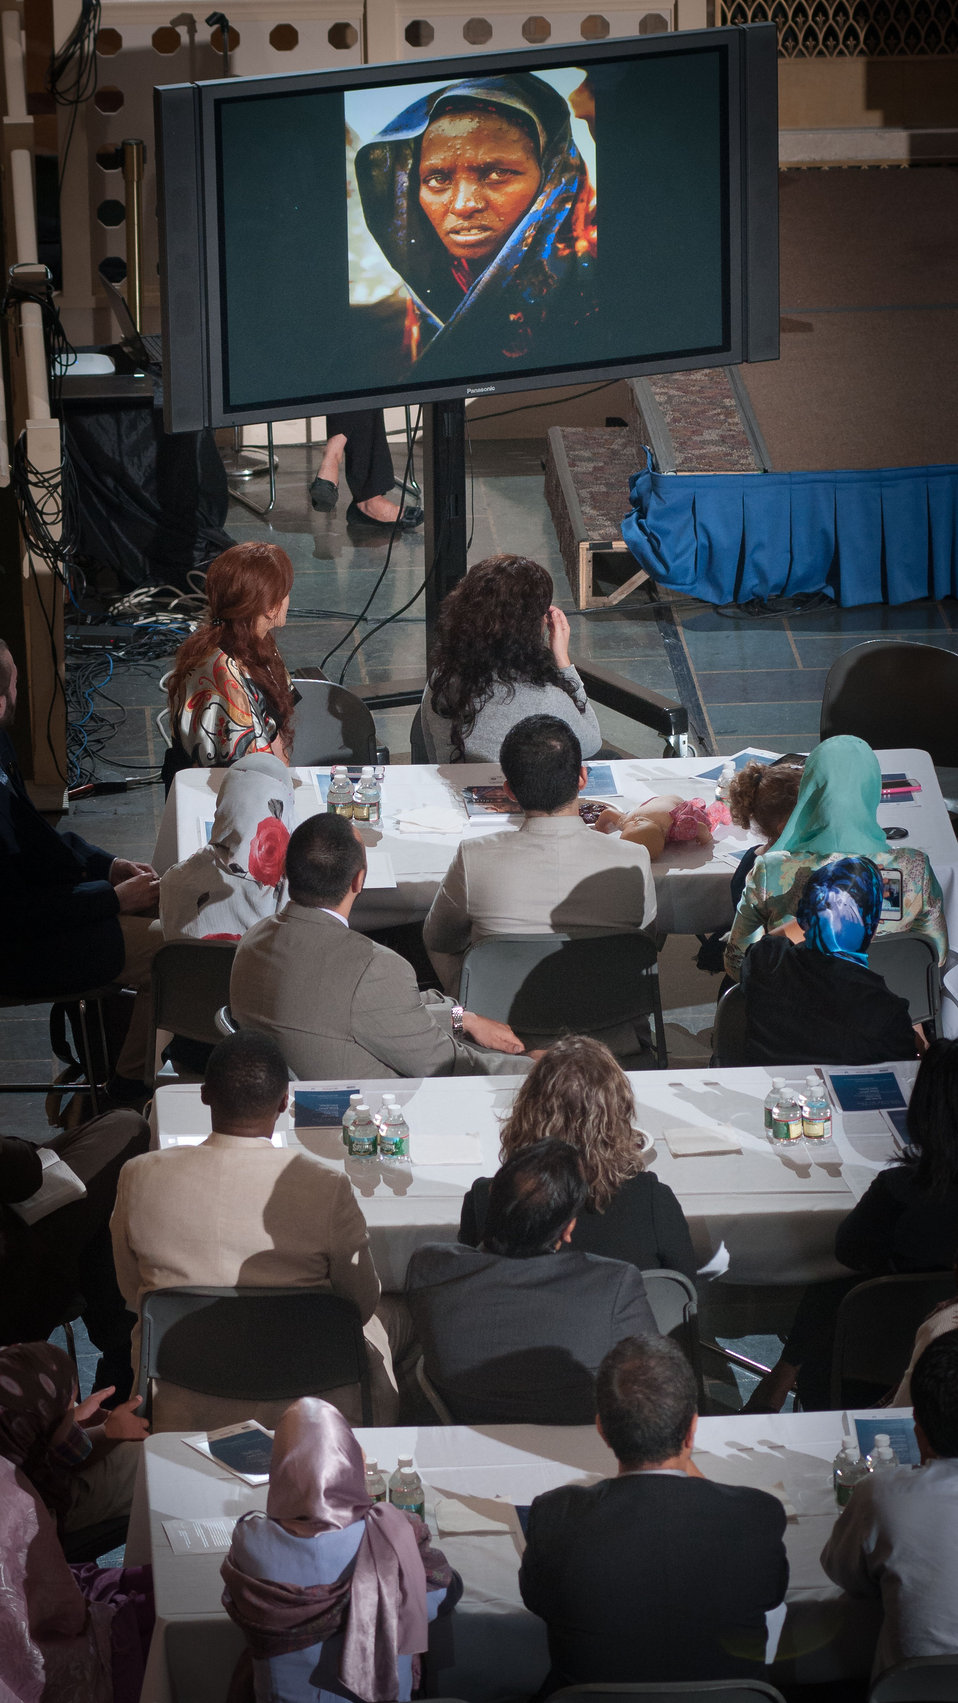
Guests view the photographic presentation 'Scars and Smiles' prior to Islamic Relief USA Creative Director and Photographer Ridwan Adhami talking about the concept and preconceived notions he had before the start of this documentary project and the new perspectives into the human condition he gained; during the Iftar event, co-sponsored by the Iftar celebration, co-sponsored by the U.S. Department of Agriculture, U.S. Agency for International Development (USAID) and Islamic Relief USA, on Tuesday, August 7, 2012, in the USDA Whitten Building, in Washington, D.C. Ramadan is the month of fasting, intensive prayer, sacrifice and worship for Muslims around the world. Throughout this month, Muslims fast during the day, abstaining from consuming food from dawn to dusk and using this time to purify spiritually. Fasting reminds Muslims of the poverty and hunger suffered by many in the United States and worldwide. It is a connection with those who are hungry not through devotion, but through the many global factors that lead to hunger and famine. Iftar is the meal at which Muslims break their fast at sunset, usually by eating dates, according to the Prophetic tradition.